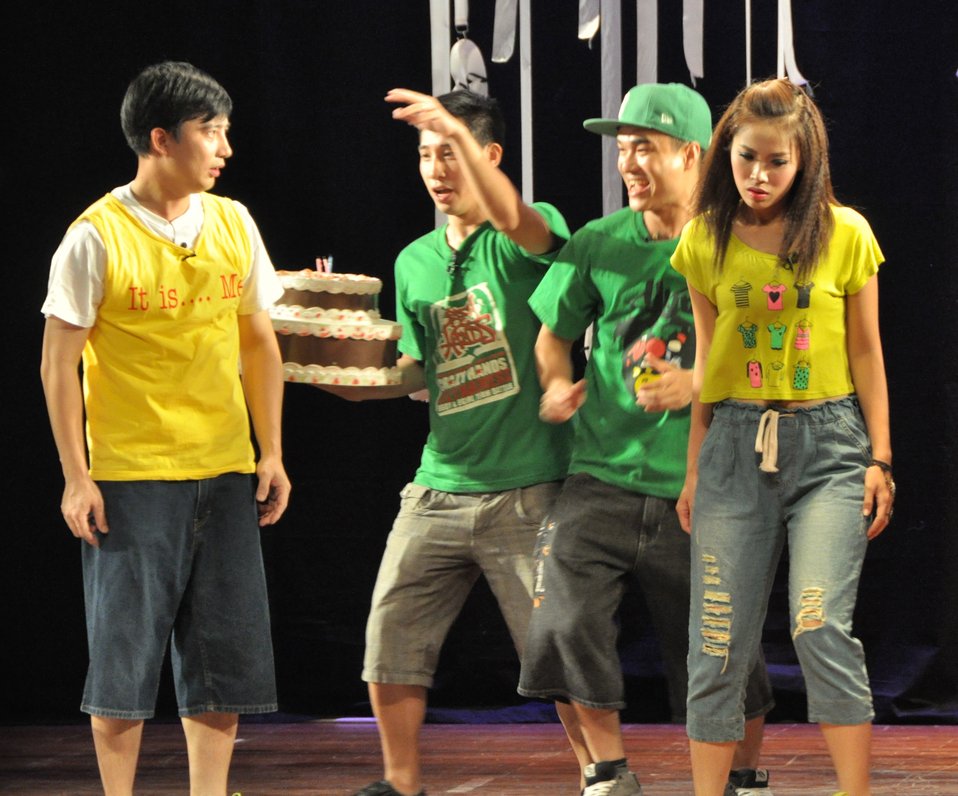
PEPFAR Musical Questions and Exclamations

Hanoi, May 17, 2013